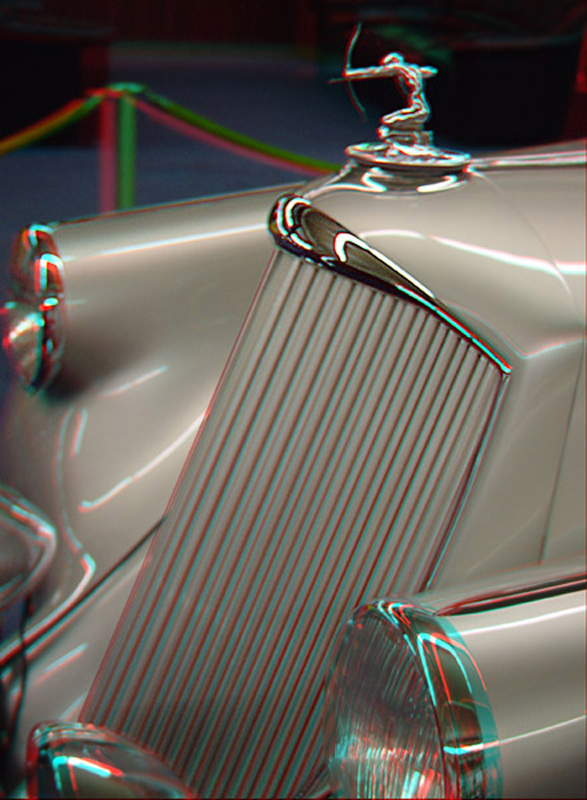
1933 Pierce Silver Arrow